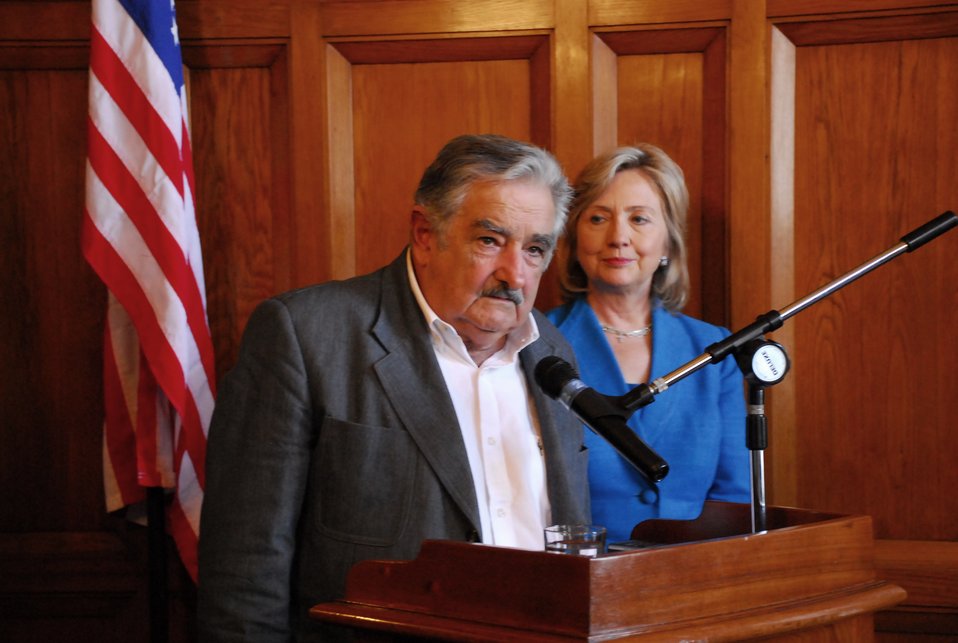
Secretary Clinton Visits Uruguay

Uruguayan President-elect José Mujica speaks beside U.S. Secretary of State Hillary Rodham Clinton in a joint press conference at the Legislative Palace in Montevideo, Uruguay March 1, 2010.